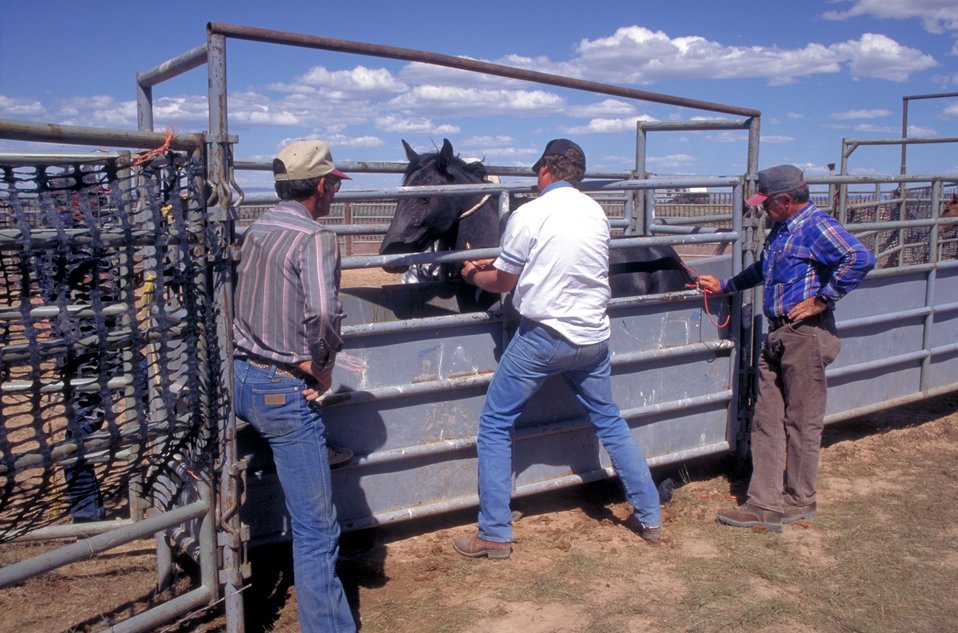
EIA testing near Vernal, Utah.